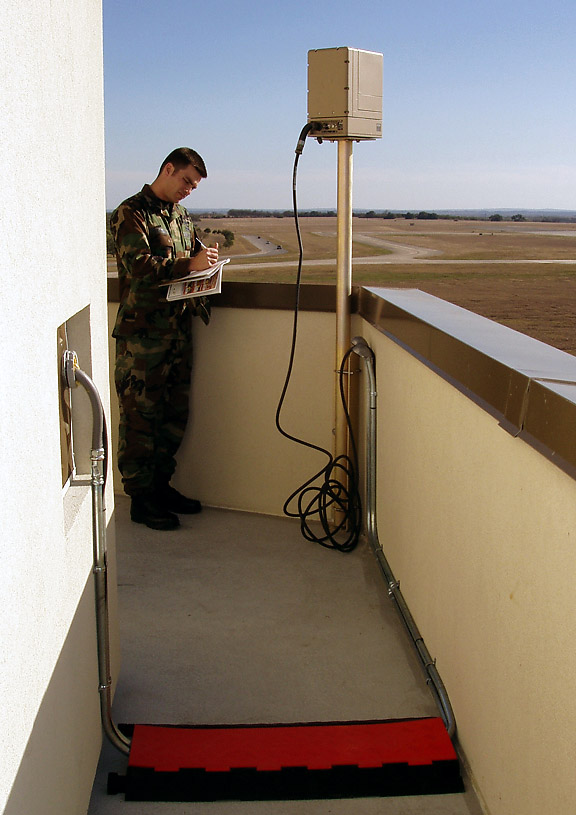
Insertion program enhances security, saves money

Capt. Max Gulezian inspects a wide-area surveillance thermal imager as part of the Transformational Technology Insertion equipment suite now installed on the airfield tower balcony at Randolph Air Force Base, Texas. The imager provides color and thermal image surveillance capability that is relayed back to a base's law enforcement desk. Captain Gulezian is a 642nd Electronic Systems Squadron Transformational Technology Insertion program manager.